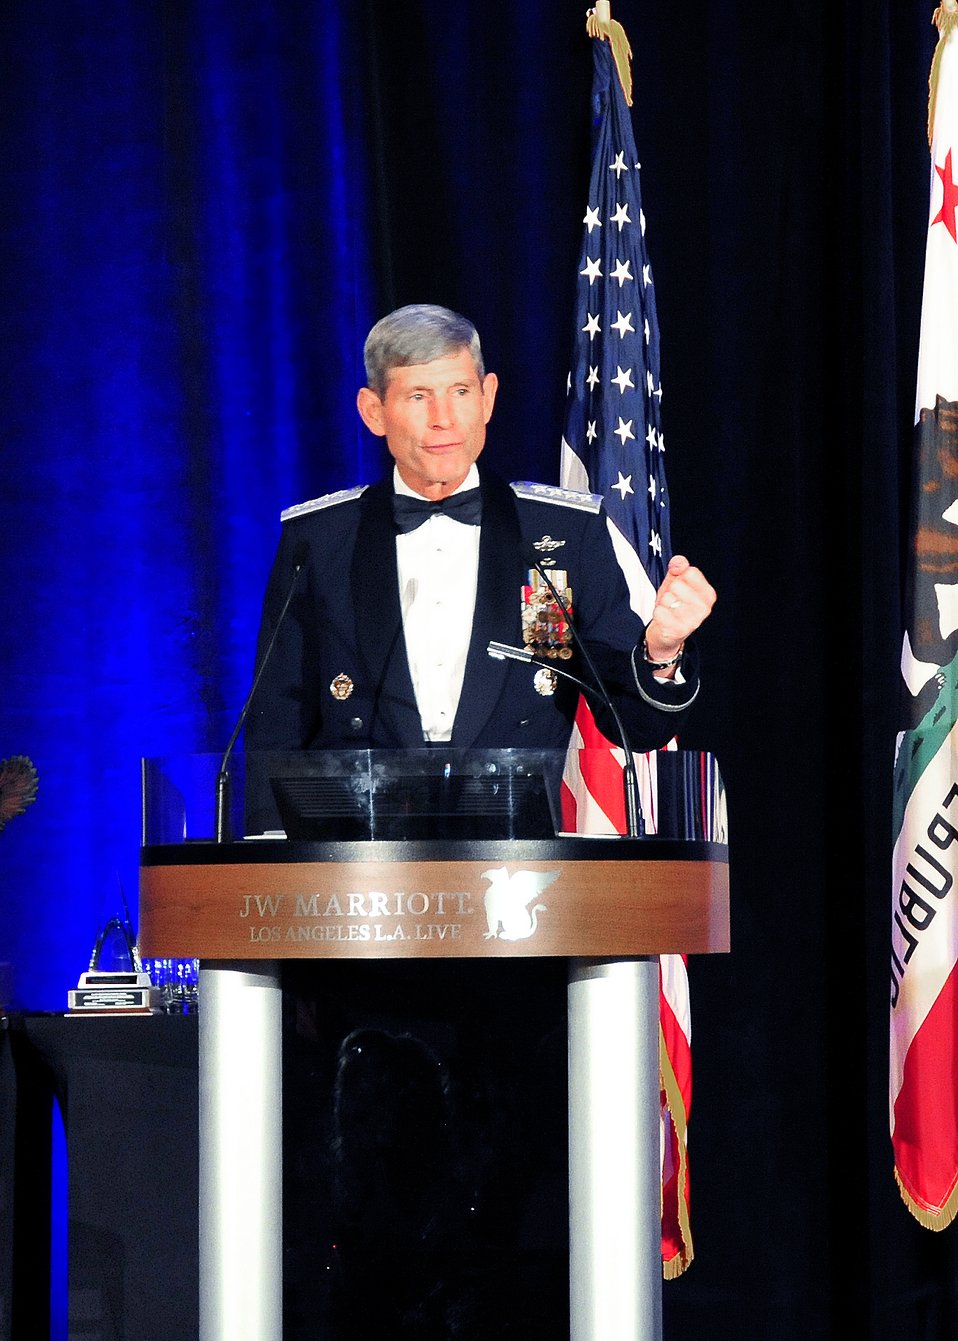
Air Force Chief of Staff speaks on diversity at NAACP dinner

Air Force Chief of Staff Gen. Norton Schwartz addresses the audience at the NAACP’s Annual Armed Services and Veterans Affairs Awards Dinner held in Los Angeles on July 26, 2011. The banquet was one of several events held in conjunction with the National Association for the Advancement of Colored People’s annual convention and coincided with the 63rd Anniversary of the executive order desegregating the military.